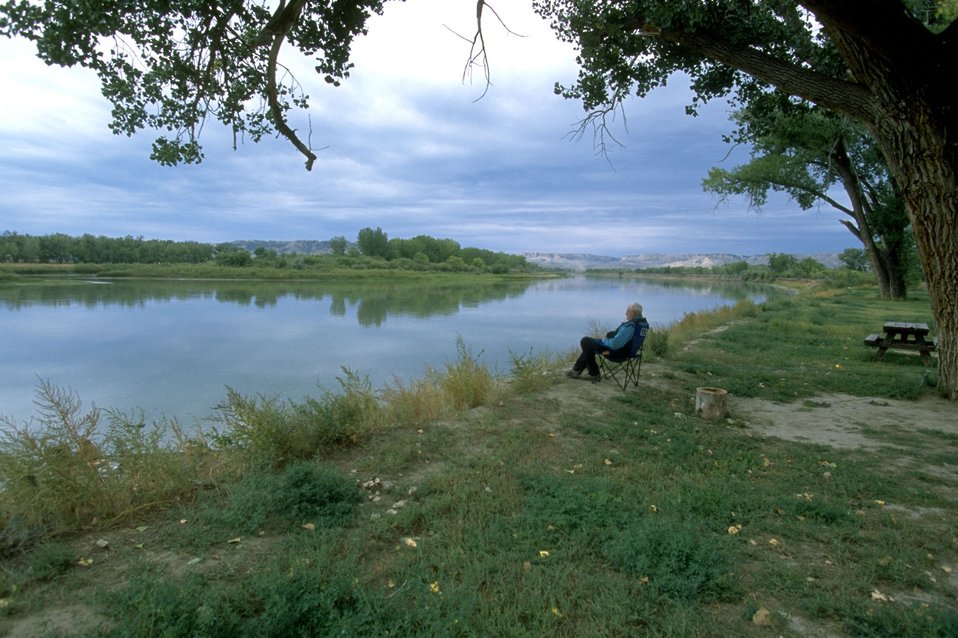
Relaxing along the Upper Missouri River